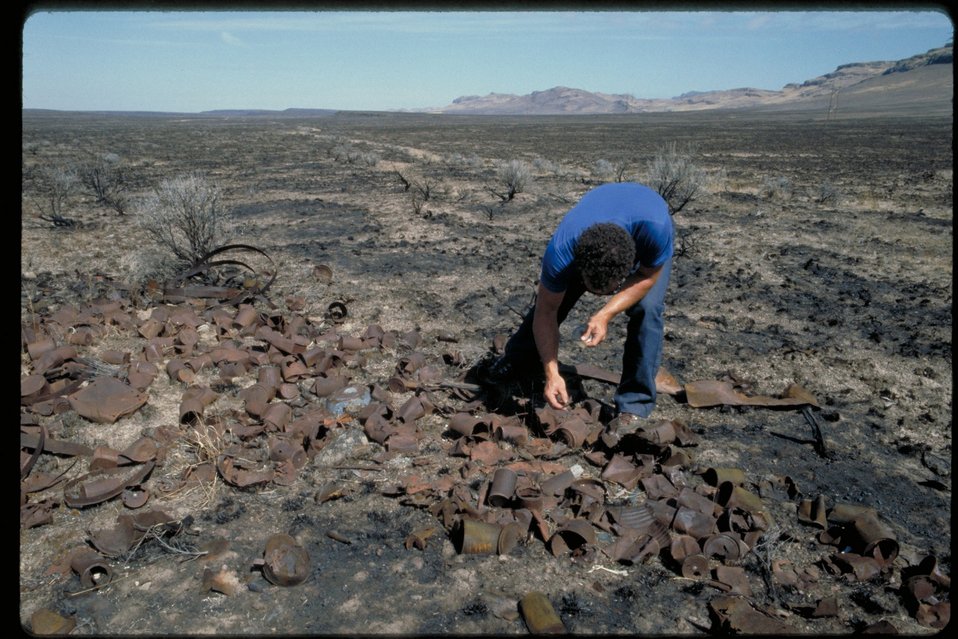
Oregon Trail West of Rattlesnake Lower Snake River District